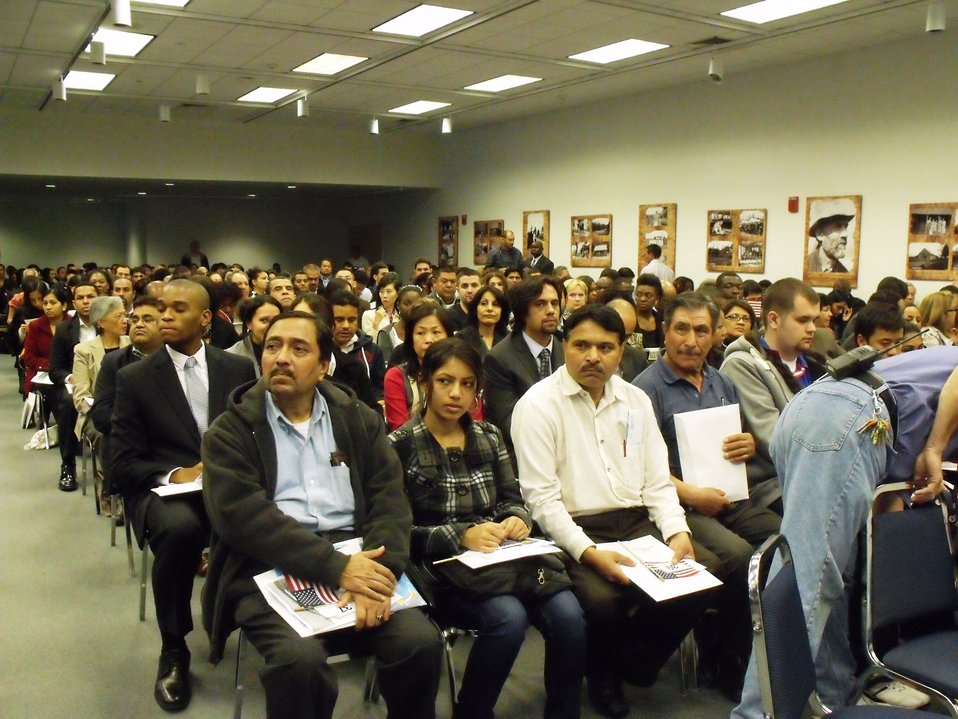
Naturalization Ceremony